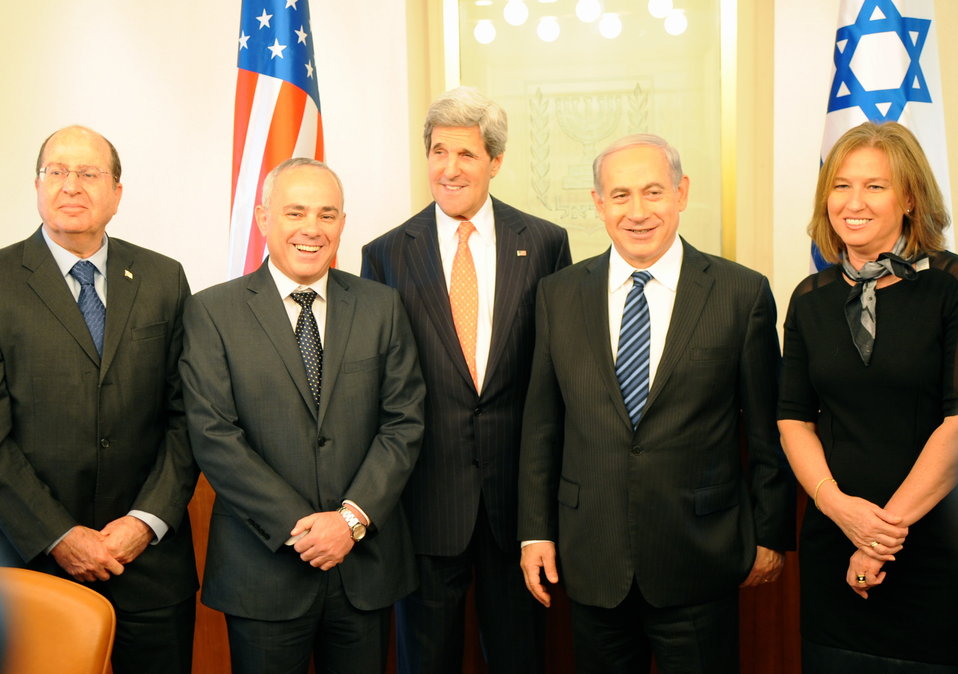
Secretary Kerry Poses for a Photo With Israeli officials

U.S. Secretary of State John Kerry poses for a photo with members of the Israeli government before a meeting in Jerusalem on May 23, 2013. They are, from left, Israeli Defense Minister Moshe Yaalon; Israeli Minister of International Relations, Israeli Strategic Affairs and Intelligence Yuval Steinitz; Israeli Prime Minister Benjamin Netanyahu; and Israeli Justice Minister Tzipi Livni.